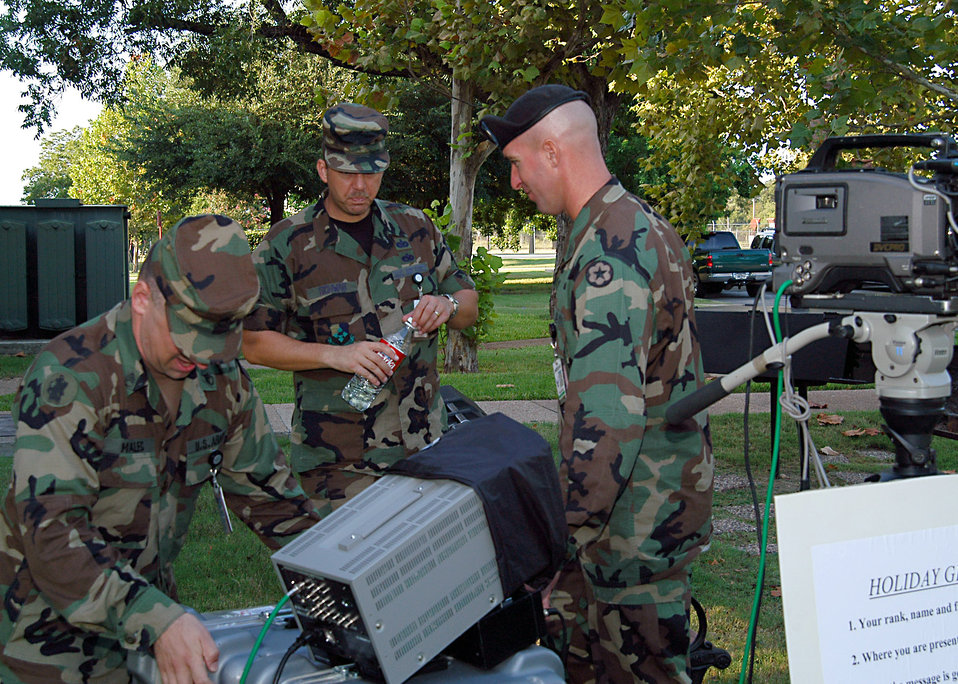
Holiday greeting team

SAN ANTONIO -- From left to right, Army Staff Sgt. Gereld Malec, Tech. Sgt. Erich Schwab and Army Sgt. 1st Class James Posten set up equipment to tape mock holiday greetings here Aug. 27. The Army and Air Force Hometown News Service is sending three teams of broadcasters to Europe, the Pacific and Southwest Asia to record holiday greetings that will appear on servicemembers' hometown television stations. The teams will visit more than 75 bases in less than six weeks.